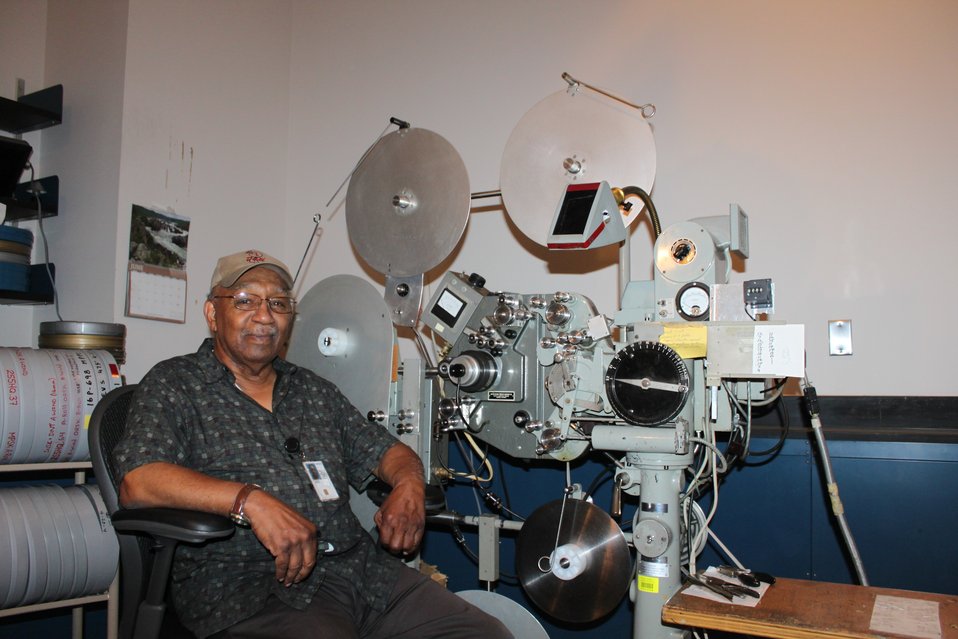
Marvin Glover, a 39-year veteran of the National Archives, poses with the Model J 35mm black and white printer on which he has printed millions of feet of film.; Location: Archives 2 - Motion Picture Preservation Lab, College Park, MD